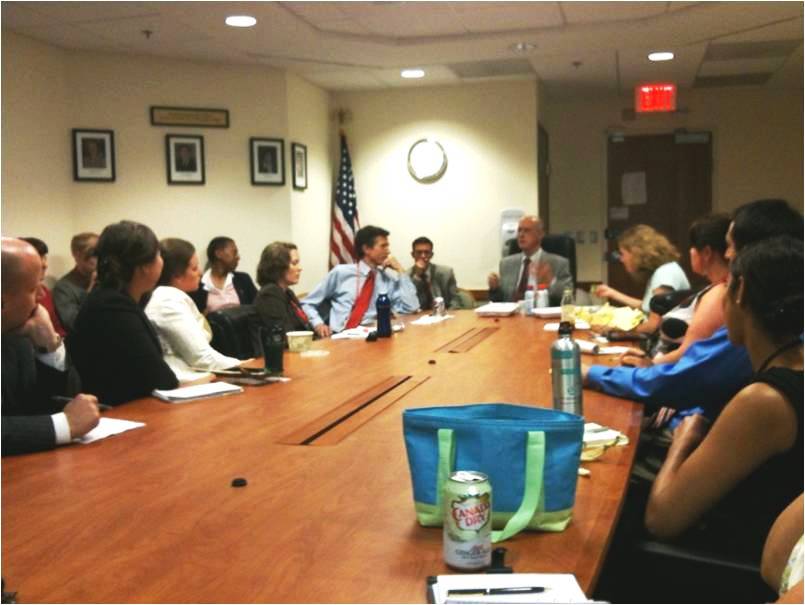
Assistant Secretary Blake Hosts a Brown Bag Lunch With Brookings President Strobe Talbott

U.S. Assistant Secretary for South and Central Asian Affairs Robert O. Blake hosts a brown bag lunch featuring Brookings President Strobe Talbott with the Bureau of South and Central Asian Affairs at the U.S. Department of State in Washington, D.C., on July 13, 2010.